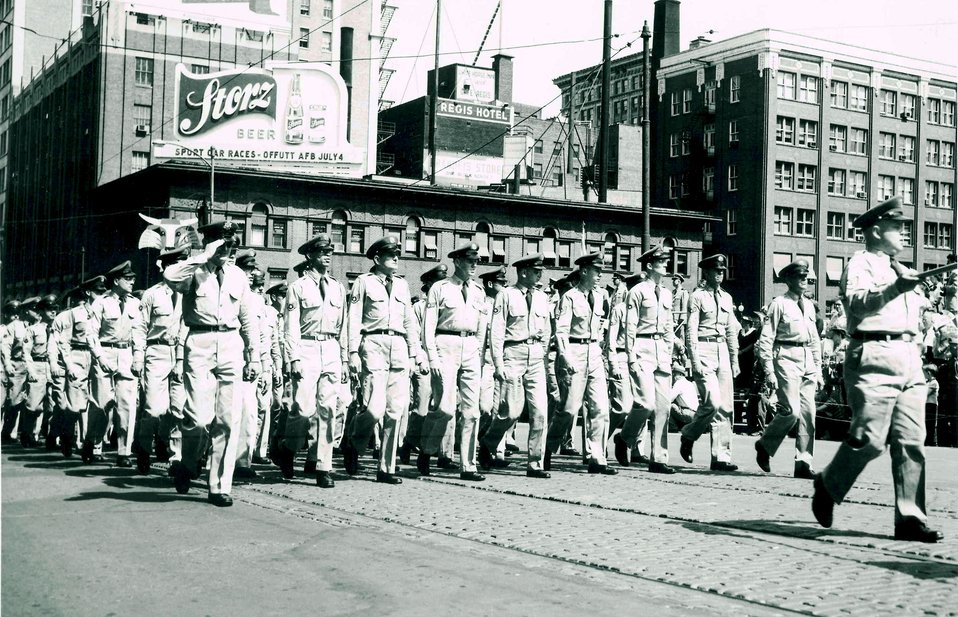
Retired chief reflects on 60 years of service

Then Tech. Sgt. Al Kremer (far right), today a retired chief master sgt. and Air Force civilian employee at United States Strategic Command headquarters at Offutt Air Force Base, Neb., leads a flight of Offutt Airmen in a parade in downtown Omaha in 1953. He recently eclipsed a combined 60 years of service as a military member and civilian employee.